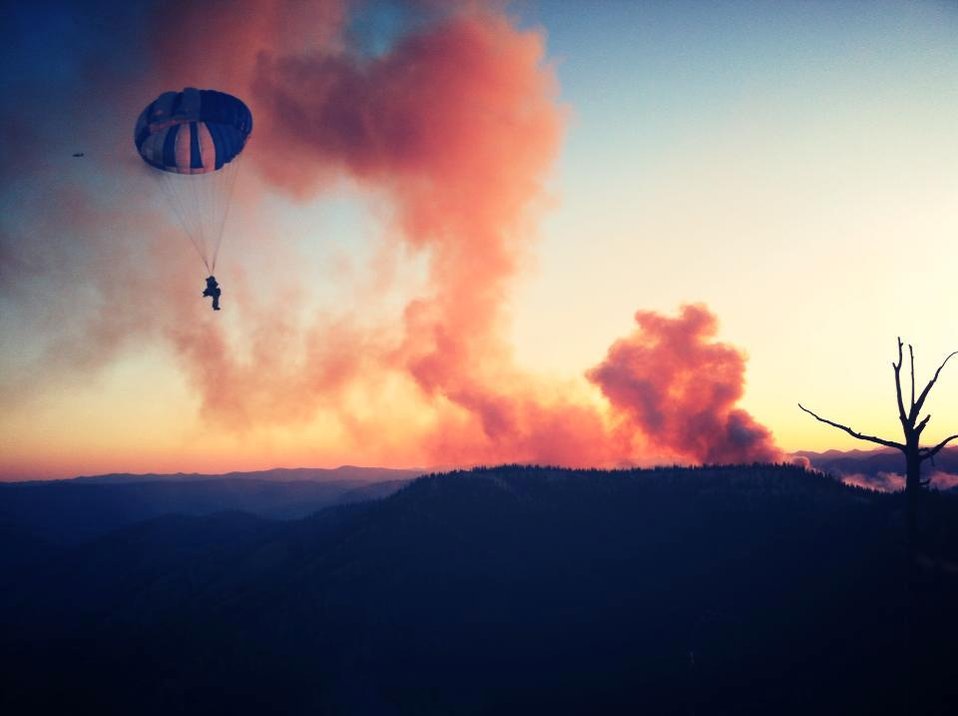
Smokejumper drops into fire area at The Thunder City Fire. The Thunder City Fire in the Payette National Forest near Stibnite, ID began on Jul. 19, 2013 by lightning and has consumed approximately 1,520 acres and is approximately 15% contained.